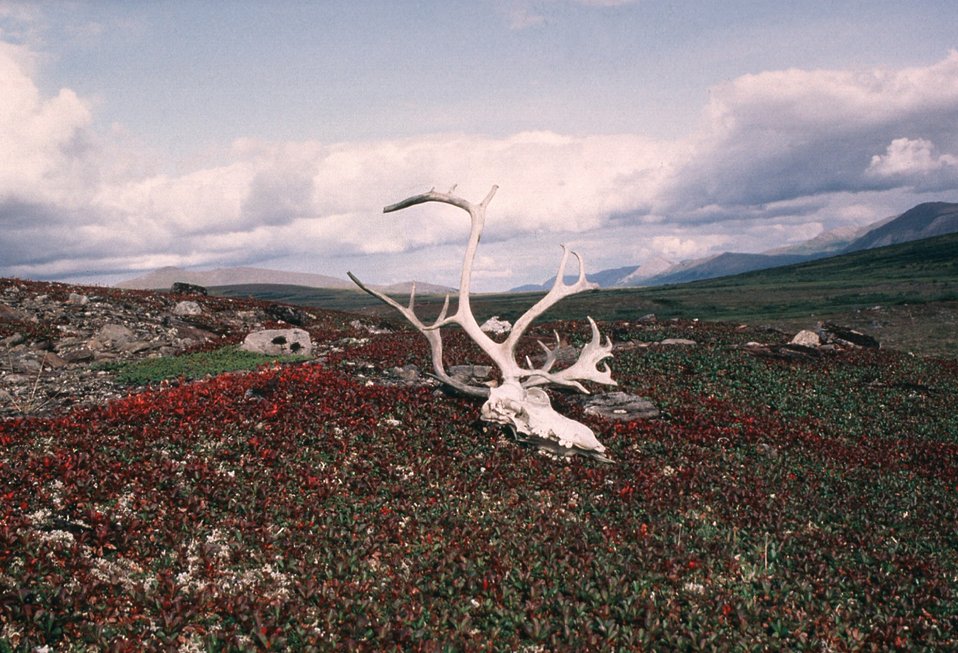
Caribou skull on tundra, Seward Peninsula